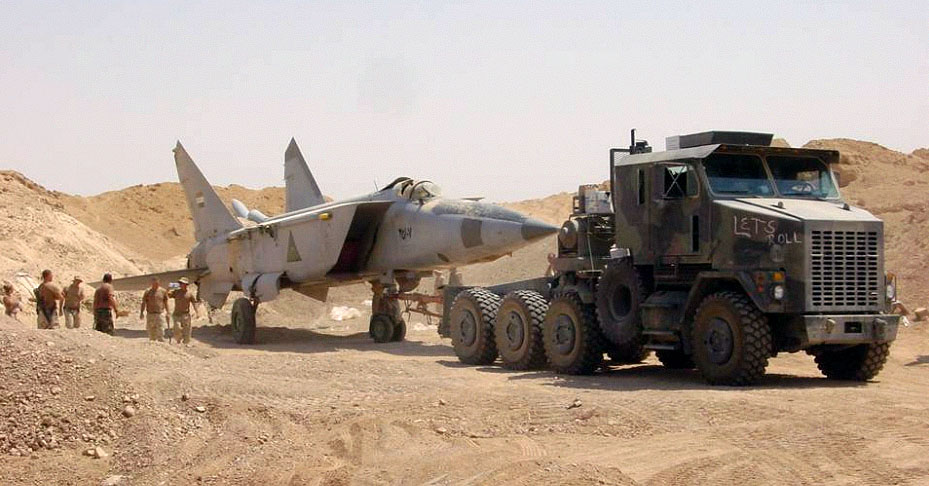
Under the sand

OPERATION IRAQI FREEDOM -- A search team discovers a MiG-25 Foxbat buried beneath the sands in Iraq. Several MiG-25 interceptors and Su-25 ground attack jets have been found buried at Al-Taqqadum air field west of Baghdad.